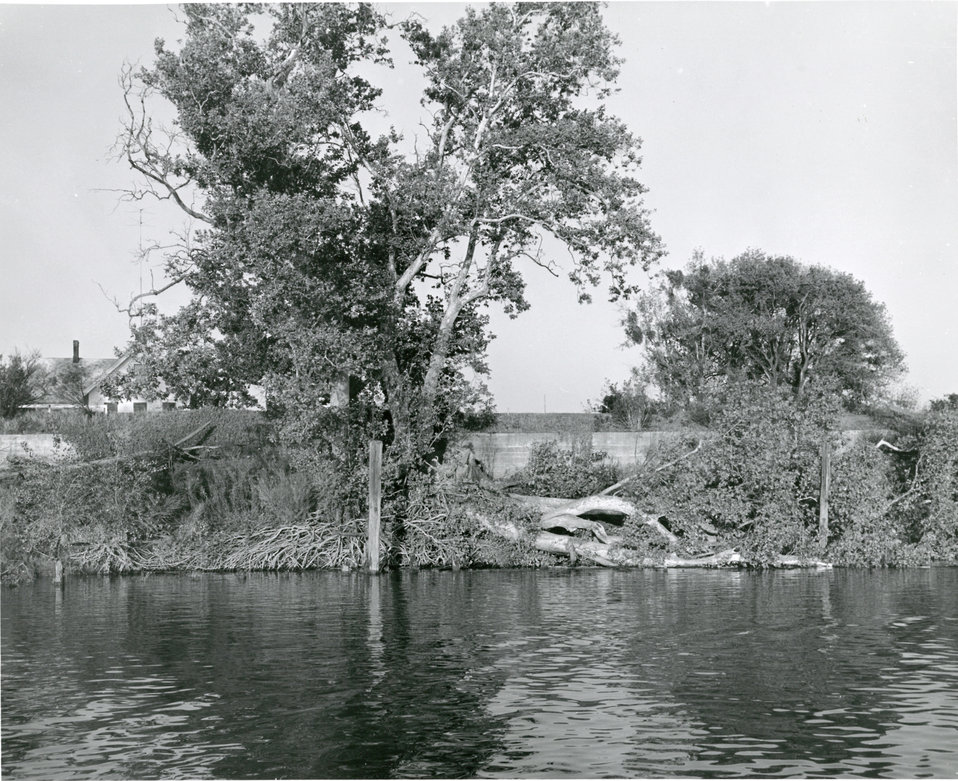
Toppled sycamore tree on Sacramento River levee

An historic photo of a toppled Sycamore tree on a Sacramento River levee near Clarksburg, Calif., shown in October 1962. A hand-written description on the back of the print reads: 'Heavy flows following a recent storm in mid-October raised high enough on the Sacramento main stem levees to demonstrate a continuing problem. Here a mature Sycamore with its roots loosened in the river side slope was toppled by a gust of wind. October 1962, three-day deluge. 4 miles downstream from Clarksburg. Amick home in background.'